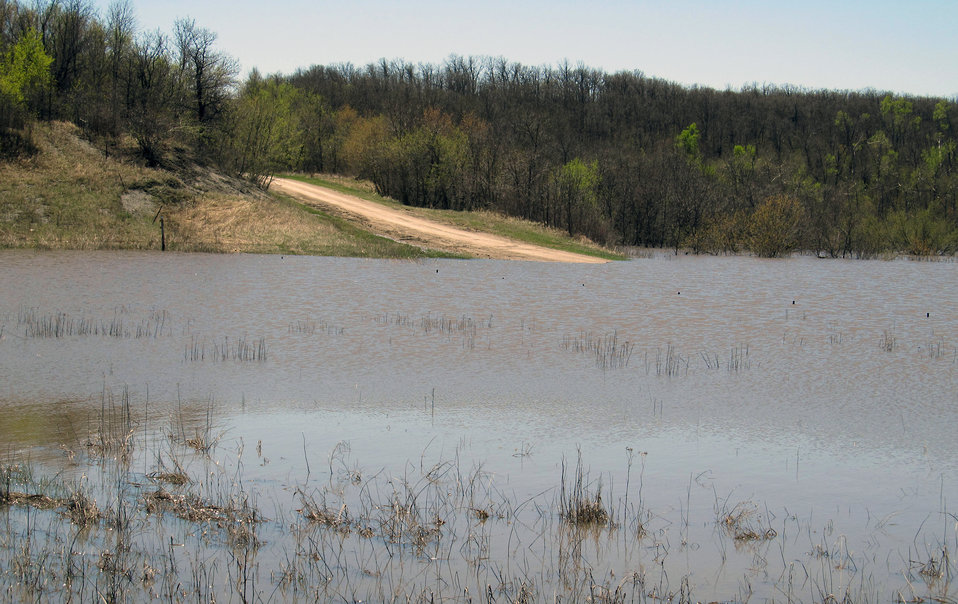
Flooding and water damage in the Park and Tongue River Watersheds located in Cavalier, Pembina and Cavalaier Counties in ND on Thursday, May 23, 2013.